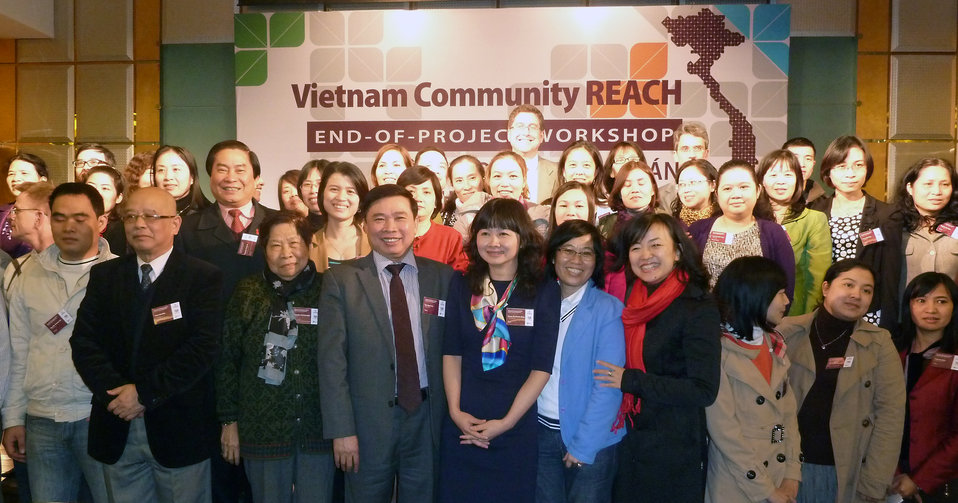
USAID, PEPFAR, and Pact award certificates to local and international partners for their work in addressing HIV in Vietnam

Community REACH project close-out with USAID and implementing partner, Pact